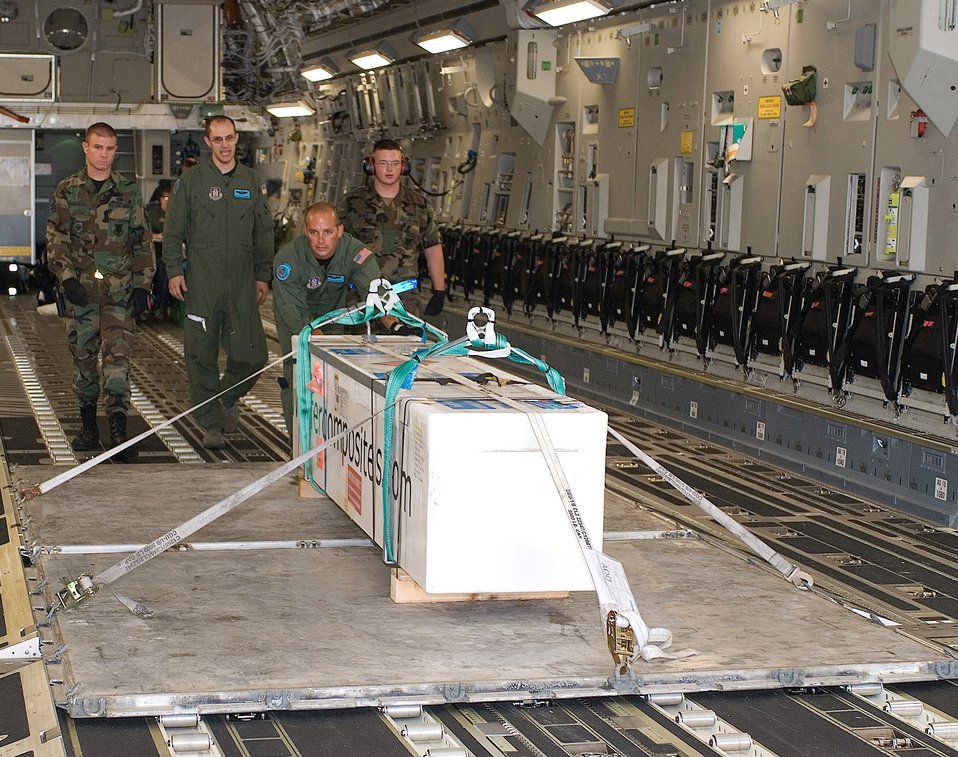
Giant squids land on Dover AFB

Senior Airman Michael Goicoechea, Master Sgts. Eric Weinmann and Phillip Vickery and Airman 1st Class James Manier unload a giant squid from a C-17 Globemaster III assigned to Dover Air Force Base, Del., July 11.Two giant squids were flown from Europe to Dover AFB July 11. The giant squids are headed to The Smithsonian National Museum of Natural History for display in the new Sant Ocean Hall, which opens Sept. 27 in Washington, D.C.